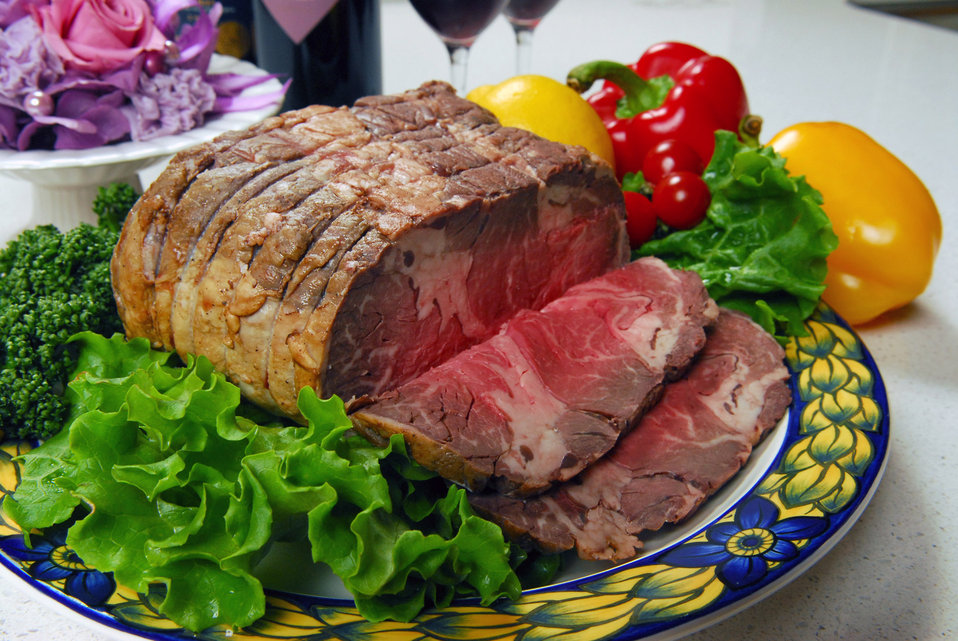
A chunk of beef 5

A chunk of beef.